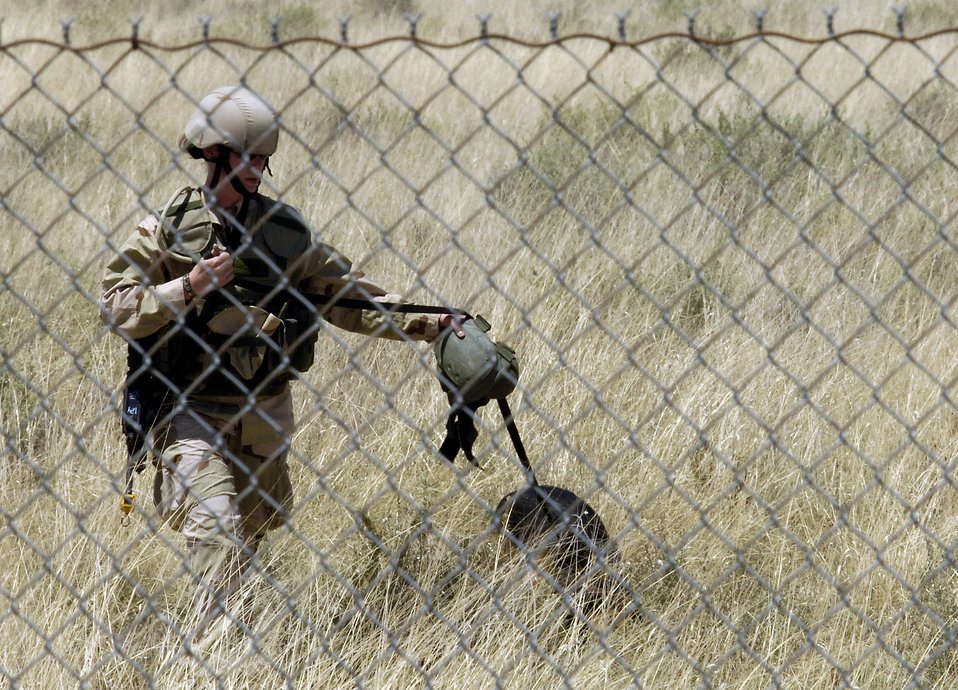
Airmen complete realistic deployment exercise

A 49th Security Forces Squadron Airman and canine perform a sweep outside the wire of the simulated deployed location during an exercise at Holloman Air Force Base, N.M., May 7.